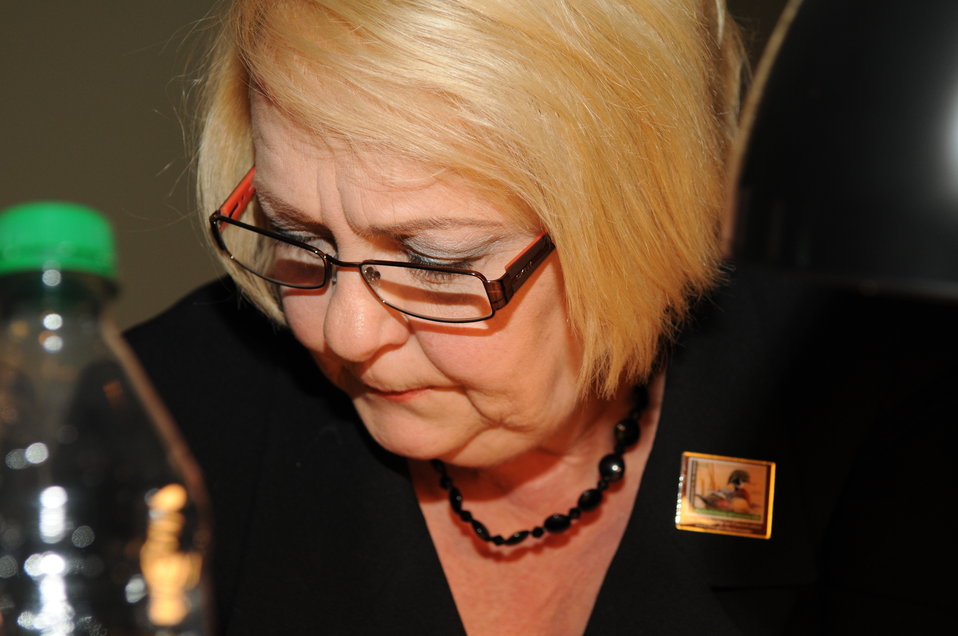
Staff

The U.S. Fish & Wildlife Service sponsored the 2012 Federal Duck Stamp Art Contest September 28 and 29 in Ogden, Utah, at Weber State University. A panel of five judges was responsible for choosing the art work used to design the 2013-2014 Migratory Bird Hunting and Conservation Stamp.